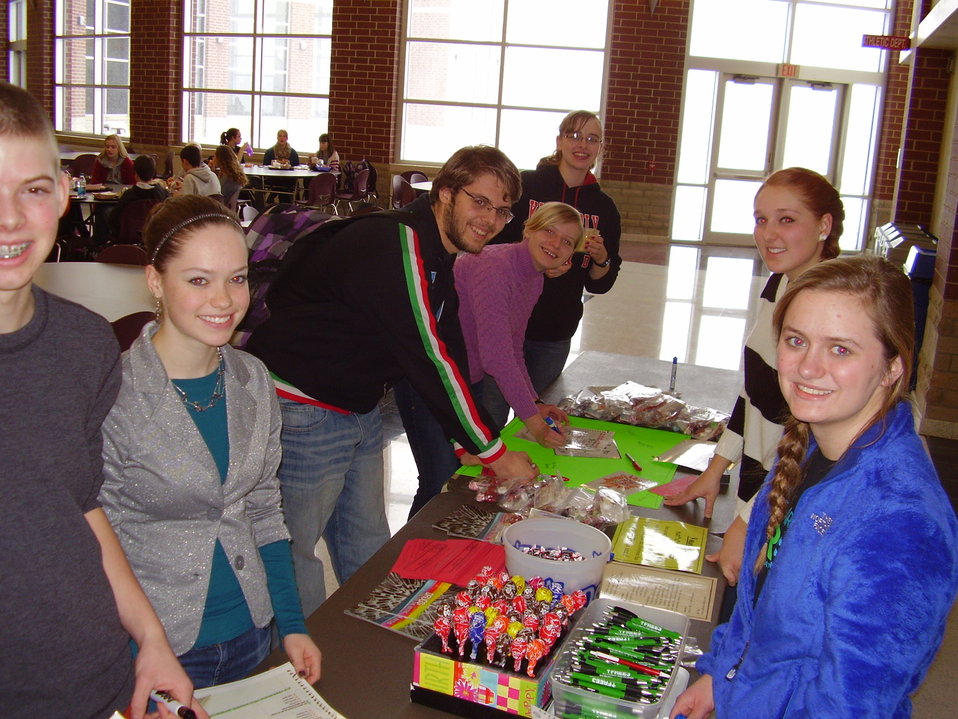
Wisconsin Teens and NDFW 2013

Combined Locks, Wis., Local teens participate in NDFW 2013 Events.